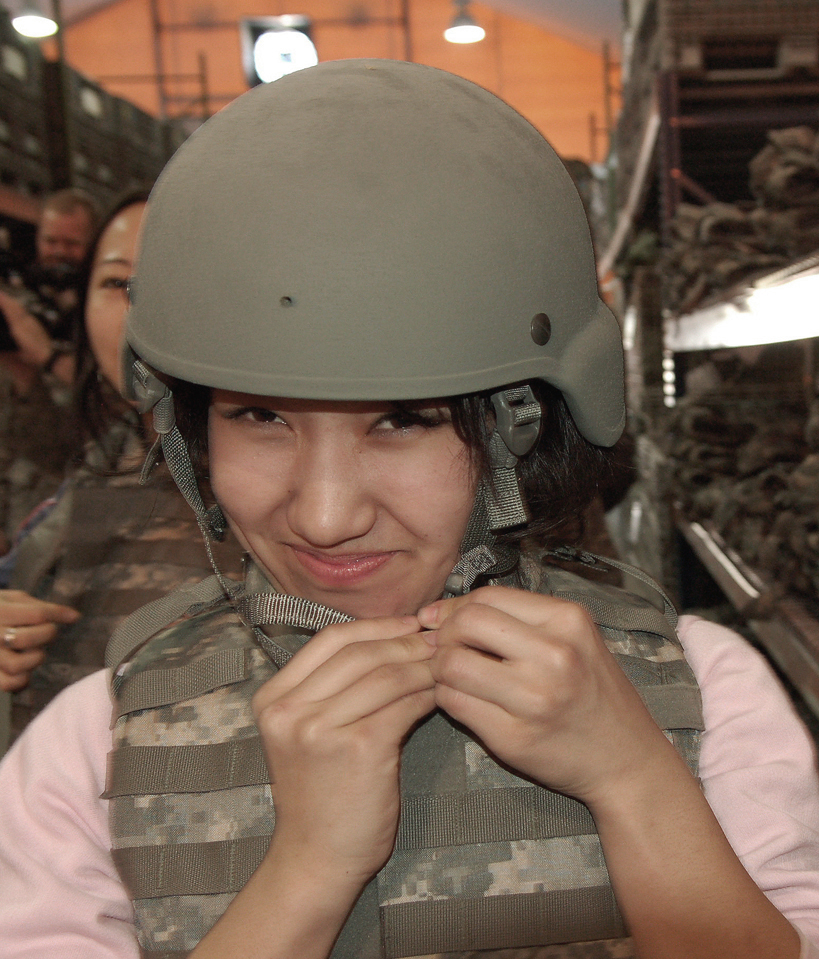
Kyrgyz students get insiders' glimpse of Manas mission

Aikanysh Atakanova grins as she takes in the 35-pound weight of individual body armor while visiting the Expeditionary Theater Distribution Center March 26 at Manas Air Base, Kyrgyzstan. Ms. Atakanova, a student at the American University of Central Asia, visited Manas AB with 12 other students and faculty for an orientation tour and dinner hosted by the 376th Air Expeditionary Wing Public Affairs office.